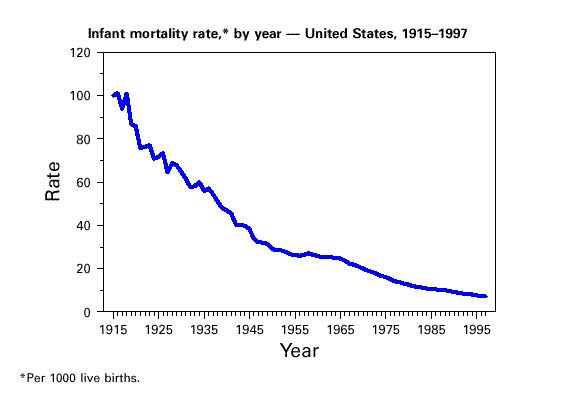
Infant mortality, United States, 1915-1997.